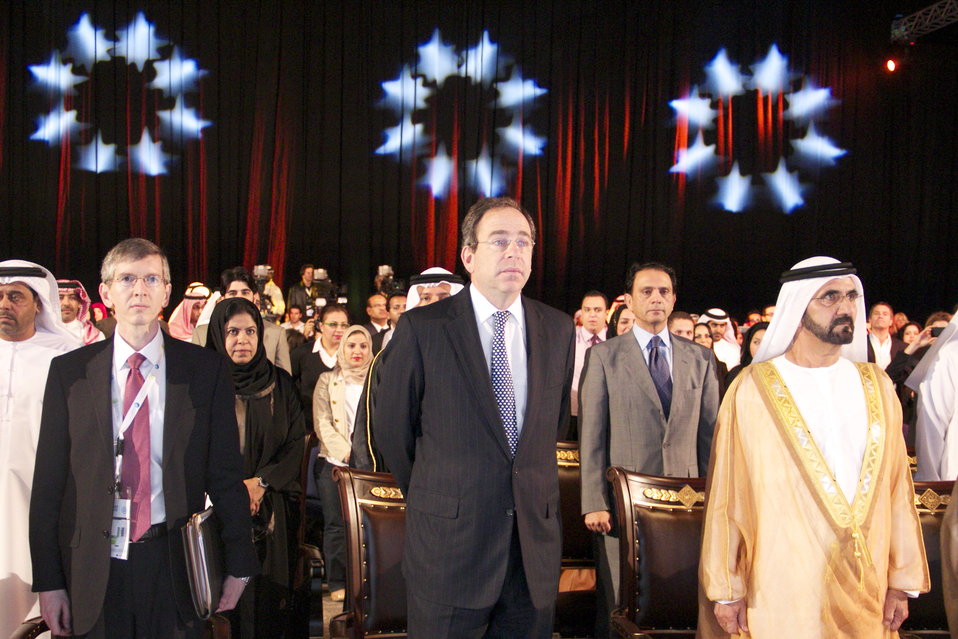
Consul General Waller, Deputy Secretary Nides, and the Ruler of Dubai Stand

U.S. Consul General to Dubai Rob Waller, left; Deputy Secretary of State Thomas Nides, center; and the Ruler of Dubai, Sheikh Mohammed bin Rashid Al Maktoum, right; stand during a presentation at the Global Entrepreneurship Summit (GES) in Dubai, United Arab Emirates, December 12, 2012.